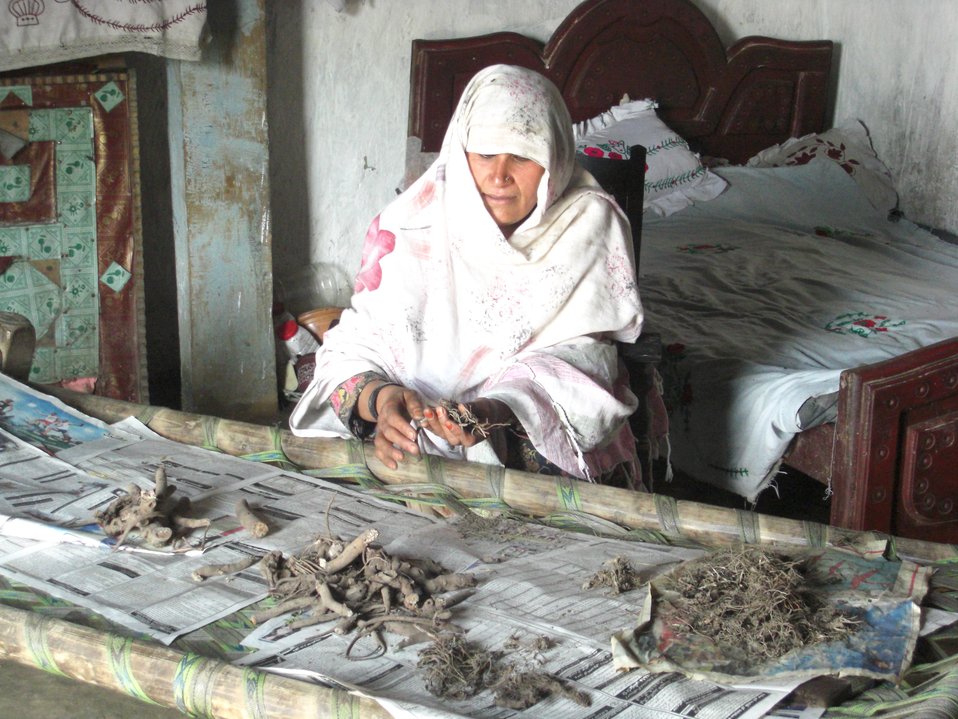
Building up

Swat, July 12, 2010 - USAID has supported 7,400 flood affected female medicinal plant collectors and continue to benefit more than 7,800 women in Swat and Upper Dir through its value chain program